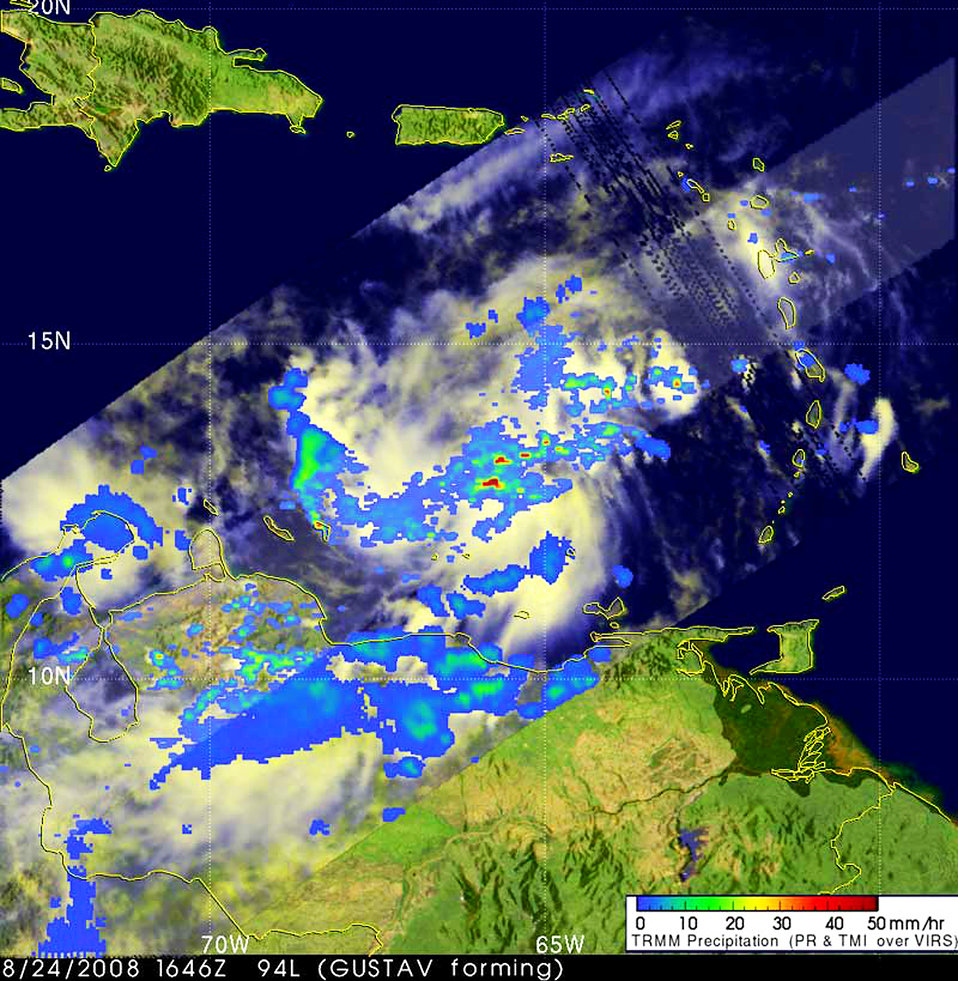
Gustav originated from an area of low pressure that had entered the southeastern Caribbean during the night of Saturday, August 23rd. Initially this low pressure center paralleled the northern coast of Venezuela as it moved in a general westward direction. The Tropical Rainfall Measuring Mission satellite (also known as TRMM) has been in service for over 10 years now, and continues to provide valuable images and information on tropical cyclones around the Tropics, using a combination of passive microwave, and active radar sensors. TRMM obtained this image of the area of showers and thundershowers associated with the low pressure.